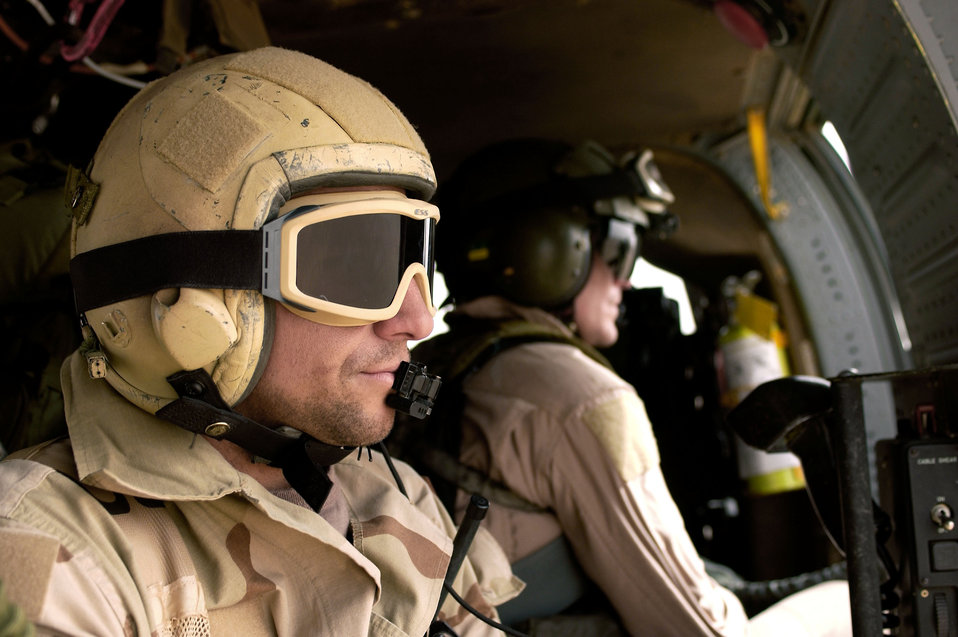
Scanning the desert

OPERATION IRAQI FREEDOM -- A Pararescueman and HH-60G Pave Hawk Engineer from the 301st Rescue Squadron scan the Iraqi desert during a mission April 6, at a forward deployed location in Iraq during Operation Iraqi Freedom.